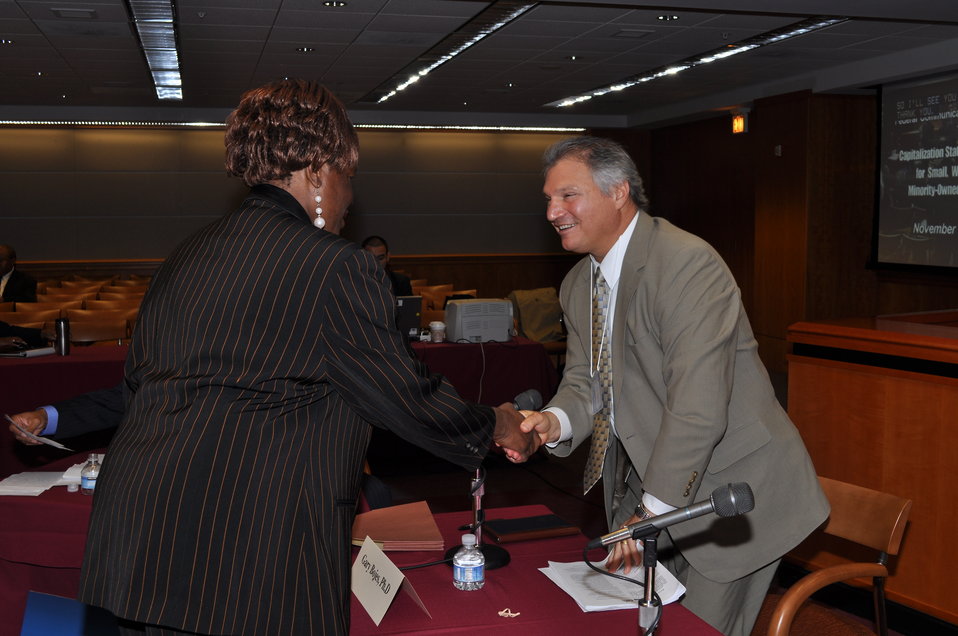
Capitalization Strategies

Workshop for small, minority and women owned businesses. Hosted by the Office of Communications Business Opportunities